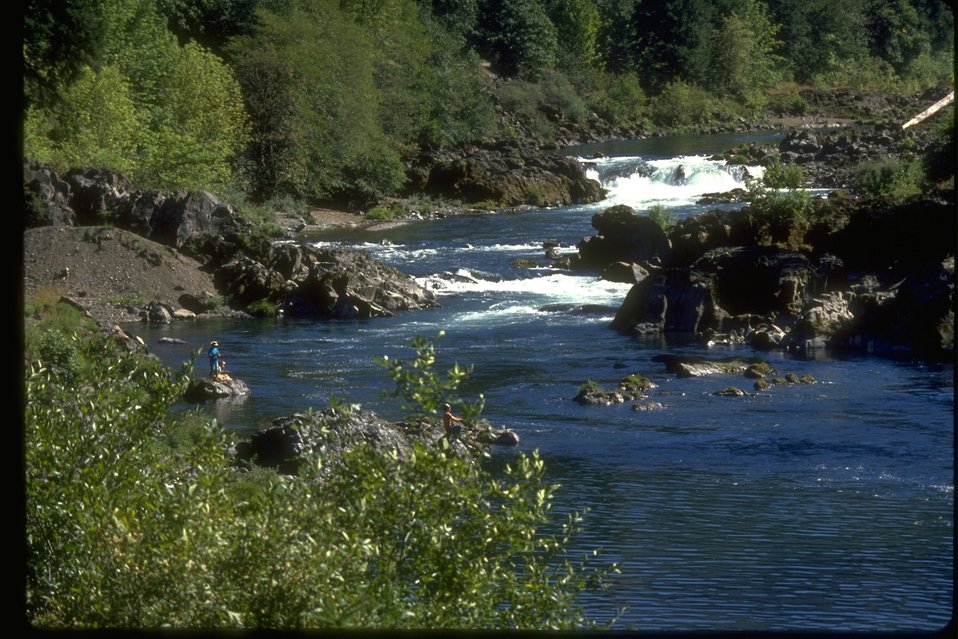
Bend in North Umpqua River.